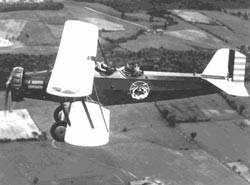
O-38

One of the best-known Air Corps observation planes of the 1930s was the O-38. Between 1931 and 1934, Douglas built 156 O-38s for the Air Corps, eight of which were O-38Fs. Some were still in service at the time of the Pearl Harbor Attack in 1941.